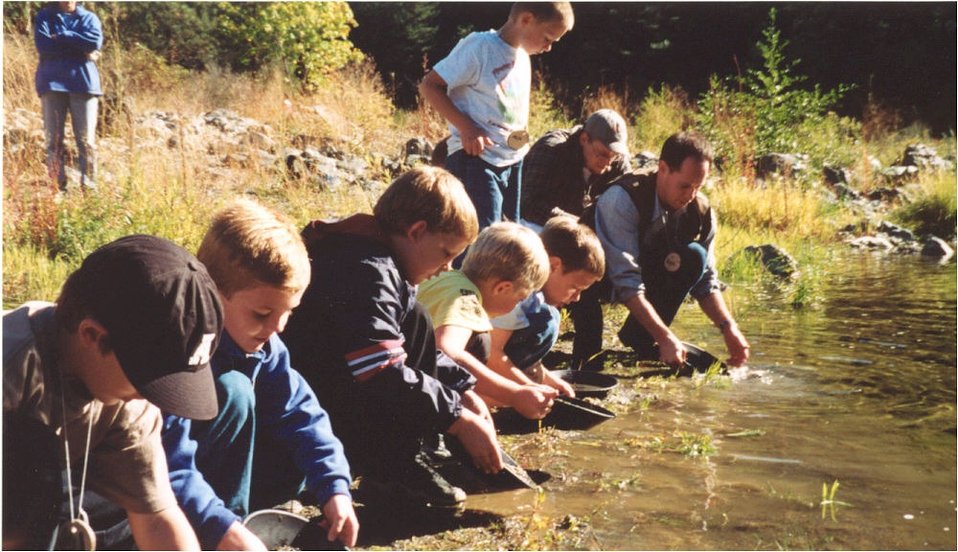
Public Lands Day goldpanning demonstration by Ken Gardner.